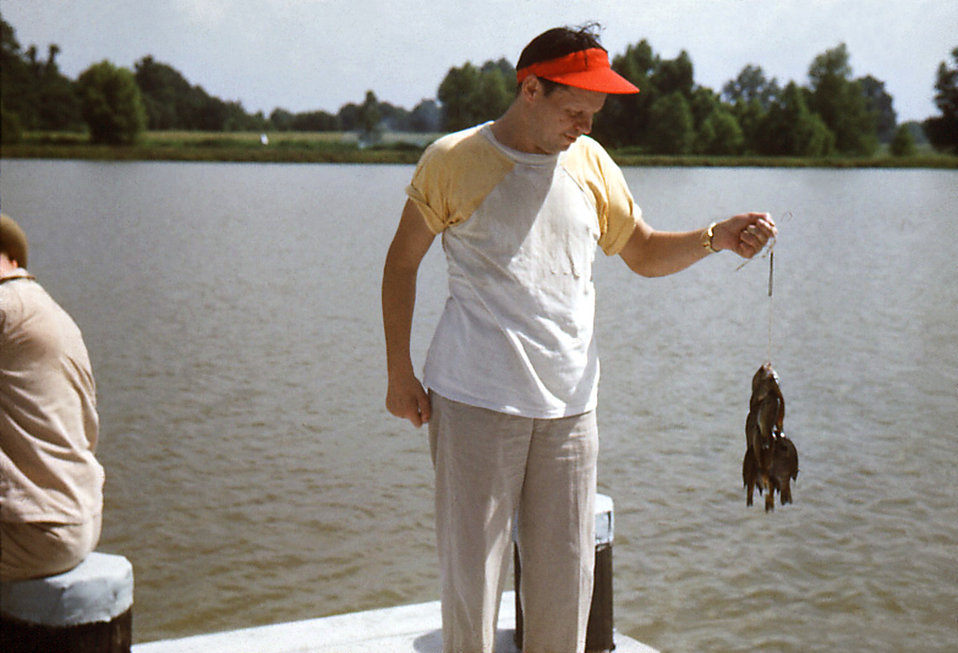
Depicted in this historic image was a Carville Leprosarium patient as he was holding a number of fish caught on Lake Johansen, which was located on the hospital's acreage, and named after one of the Leprosarium's Chief Medical Ofiicers, Dr. Frederick A. Johansen. Making use of this beautiful lake was routine, and included activities such as swimming, boating, and pictured here, fishing.The National Hansen's Disease Museum's (NHDM) mission is to collect, preserve and interpret the medical and cultural artifacts of the Carville Historic District. In addition, we want to promote the understanding, identification, and treatment of Hansen's Disease (leprosy). We fulfill this mission by creating and maintaining museum displays, traveling exhibits, publications and a website in order to educate and inform the public on all levels.